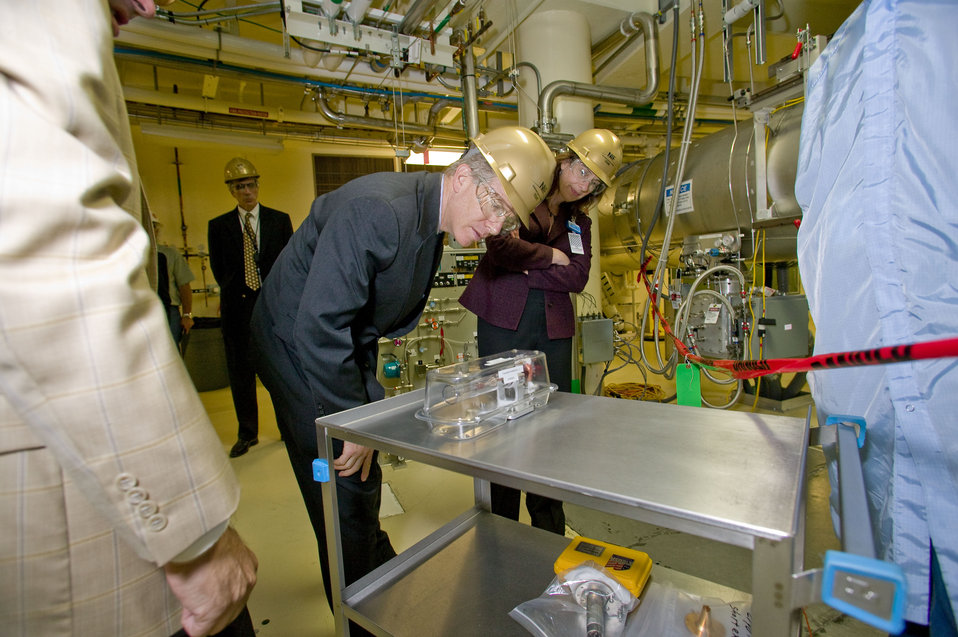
Deputy Secretary of Energy Daniel Poneman

Daniel Poneman center, takes a look at a target being installed into the
NIF Target Chamber